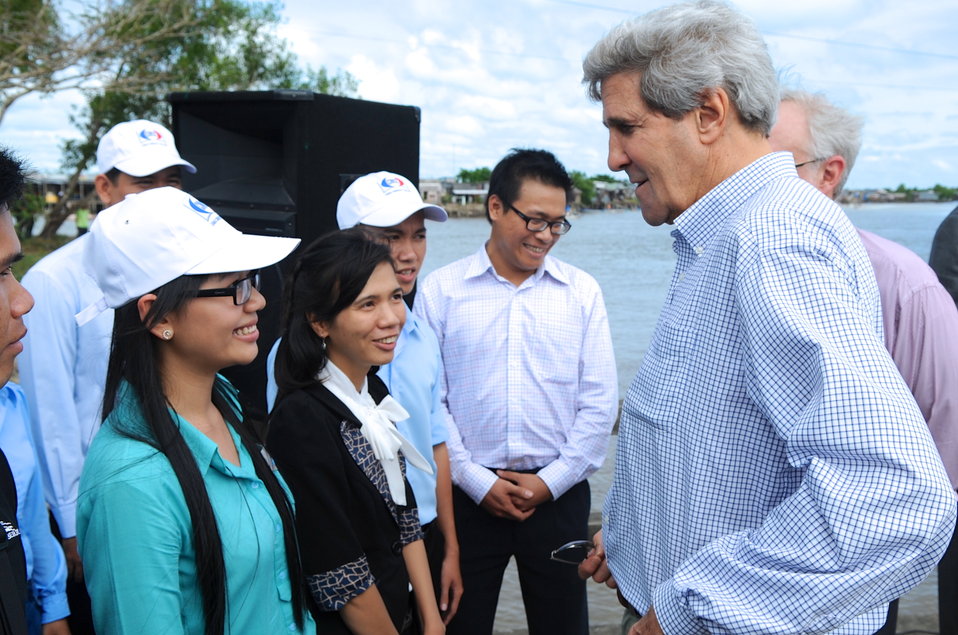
Secretary Kerry Chats With Young Climate Change Students

U.S. Secretary of State John Kerry speaks with students working in the field of climate change before a speech on the topic at the Mekong Delta village of Kien Vang, Vietnam, on December 15, 2013.